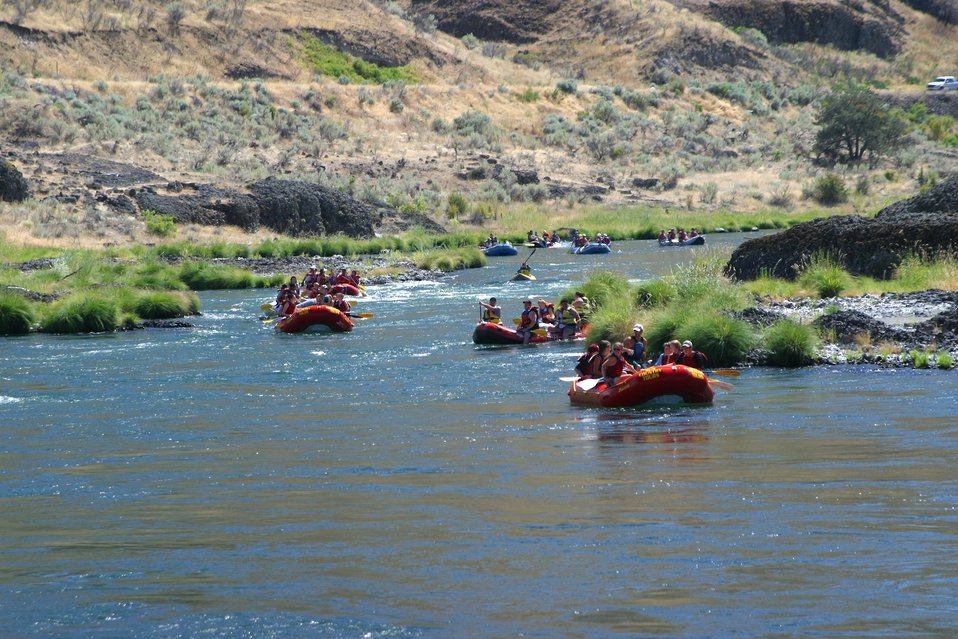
Looking up stream from the Sandy Beach take out.